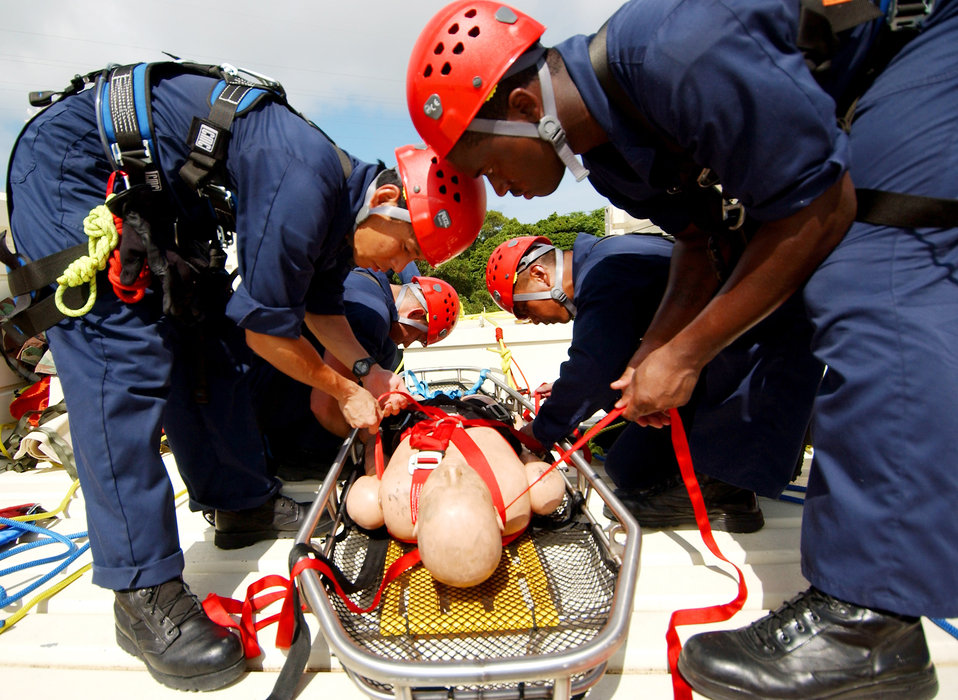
Saving lives, money

Staff Sgt. Roderick Marquez and Senior Airman Derek White along with other team members secure an unconscious victim in a stokes basket before lowering off the tower June 17. Sergeant Marquez is assigned to 36th Civil Engineer Squadron at Andersen Air Force Base, Guam. Airman White is assigned to the 18th Civil Engineer Squadron at Kadena Air Base, Japan.